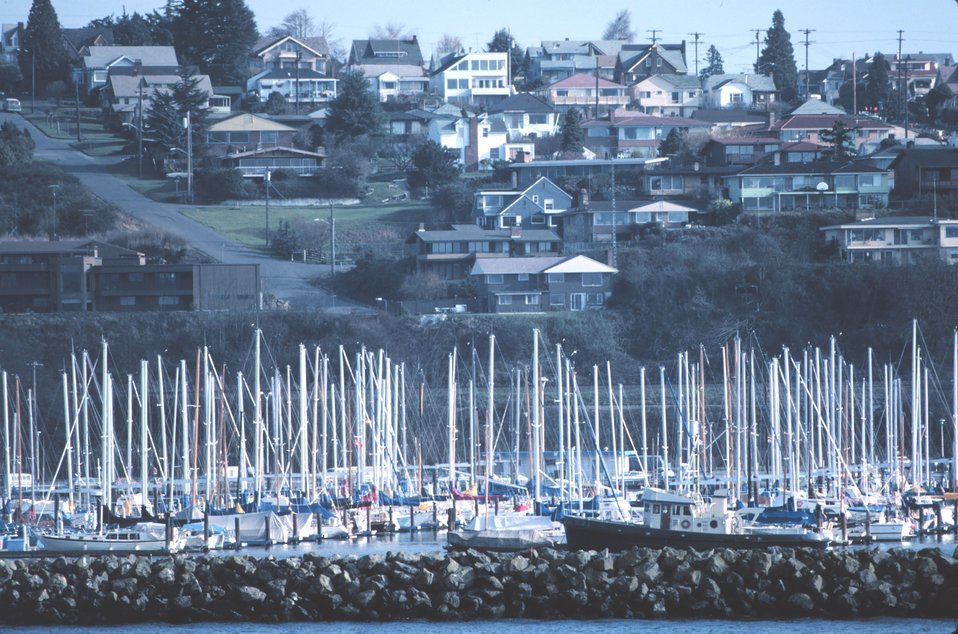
Looking over a marina at the homes of lucky folks with waterfront views.